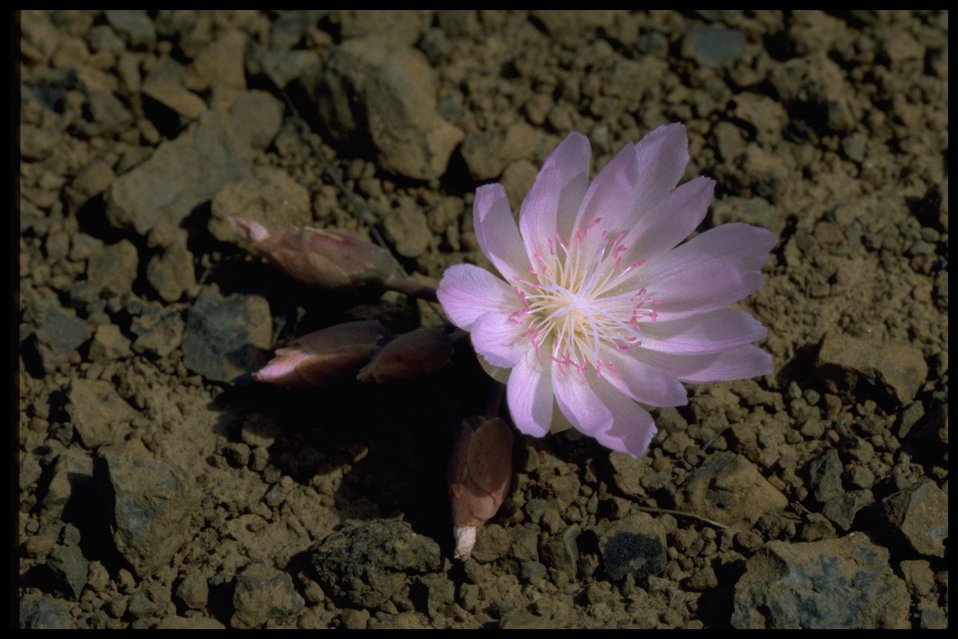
Closeup shot of Bitterroot wildflower and buds